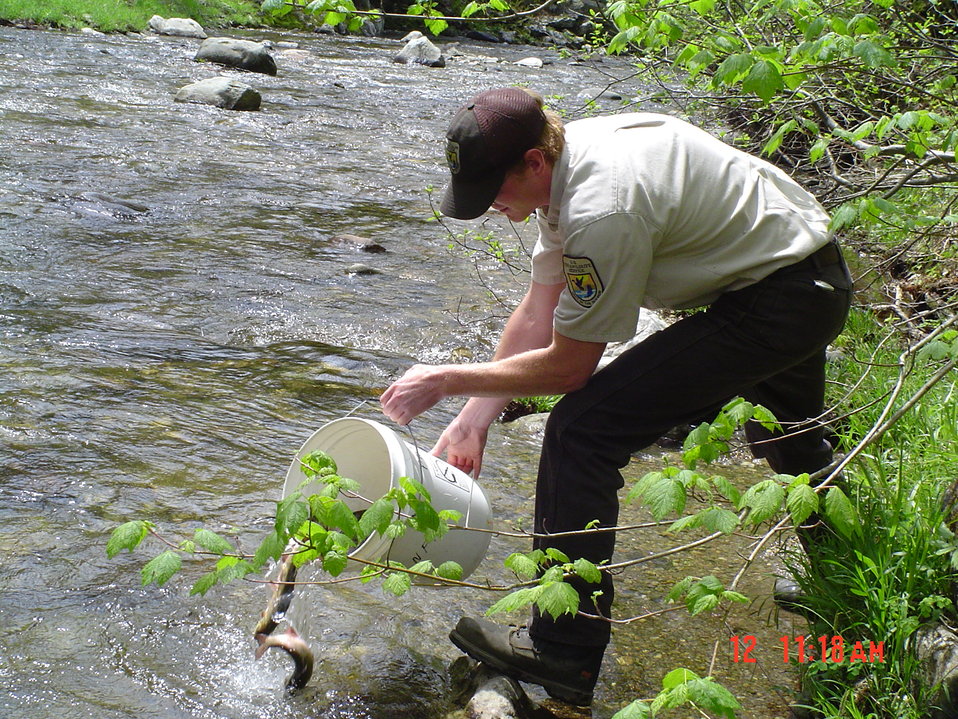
Brook trout stocking at the Dwight D. Eisenhower National Fish Hatchery.